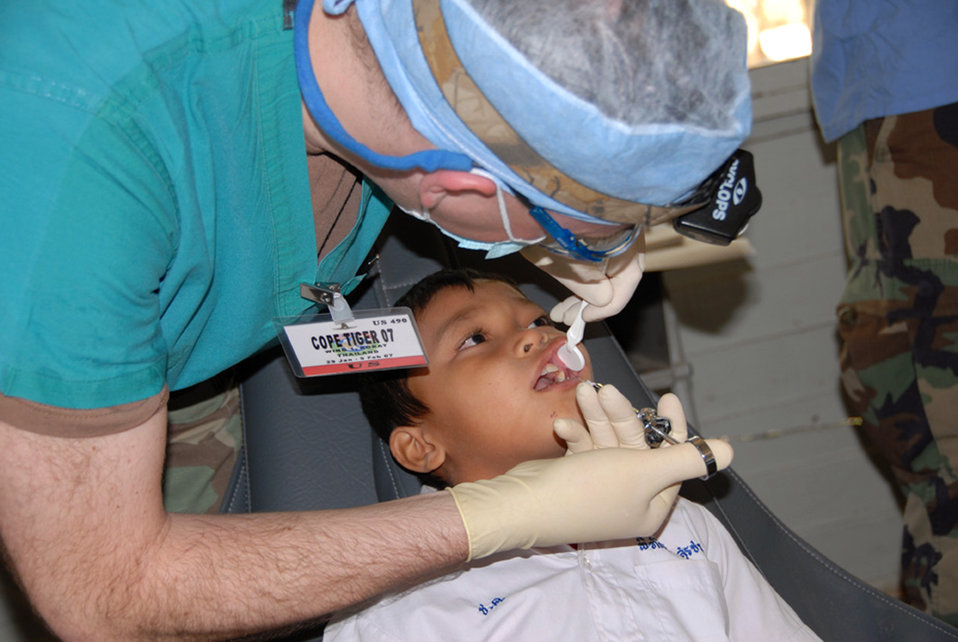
Cope Tiger participants provide humanitarian assistance

Capt. Alan Neal performs a tooth extraction on a student from the Ban Chaimongkon school Jan. 30 in Korat, Thailand. Military members from the United States, Thailand and Republic of Singapore took part in a humanitarian mission at the school as part of Exercise Cope Tiger 2007. Captain Neal is a dentist from the 35th Dental Squadron at Misawa Air Base, Japan.